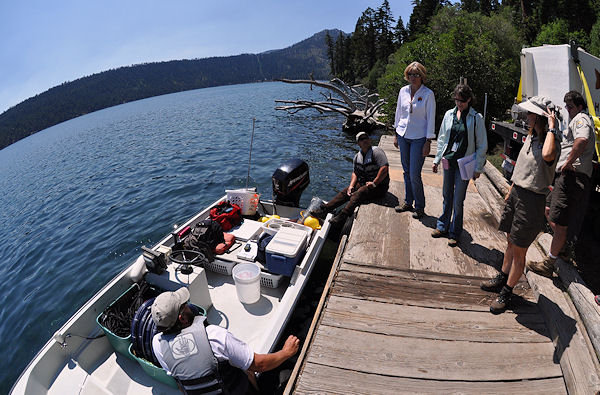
Fallen Leaf Lake

Stocking more than 8,000 Lahontan cutthroat trout in Fallen Leaf Lake, Tahoe Basin, Calif., September 10, 2010.